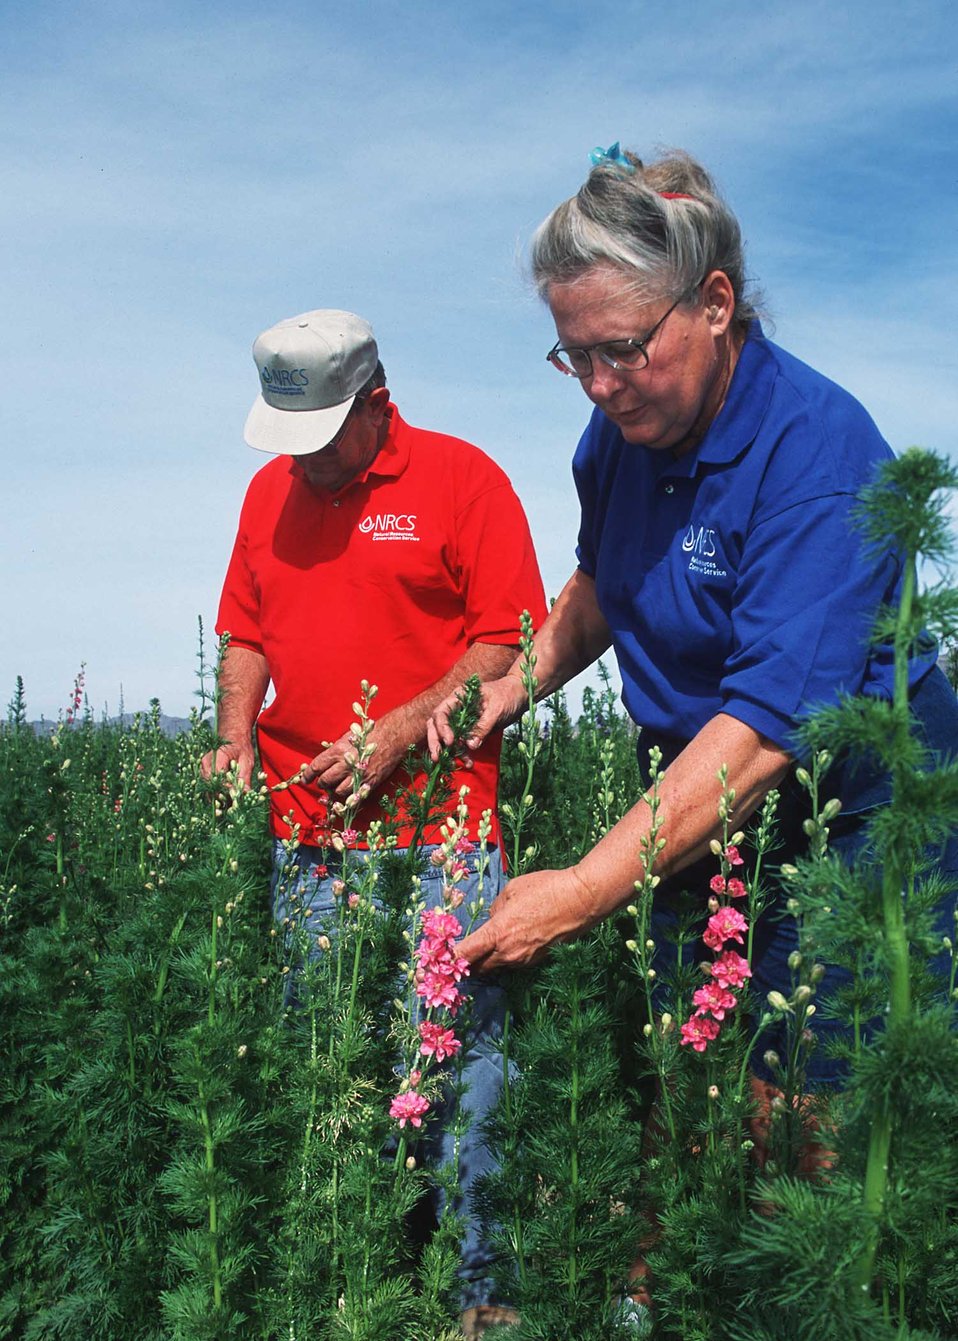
Bobbi McDermott and Neal Hoy, NRCS employees in Yuma, Az. check a field of Lupine as alternative commercial crop in the area.